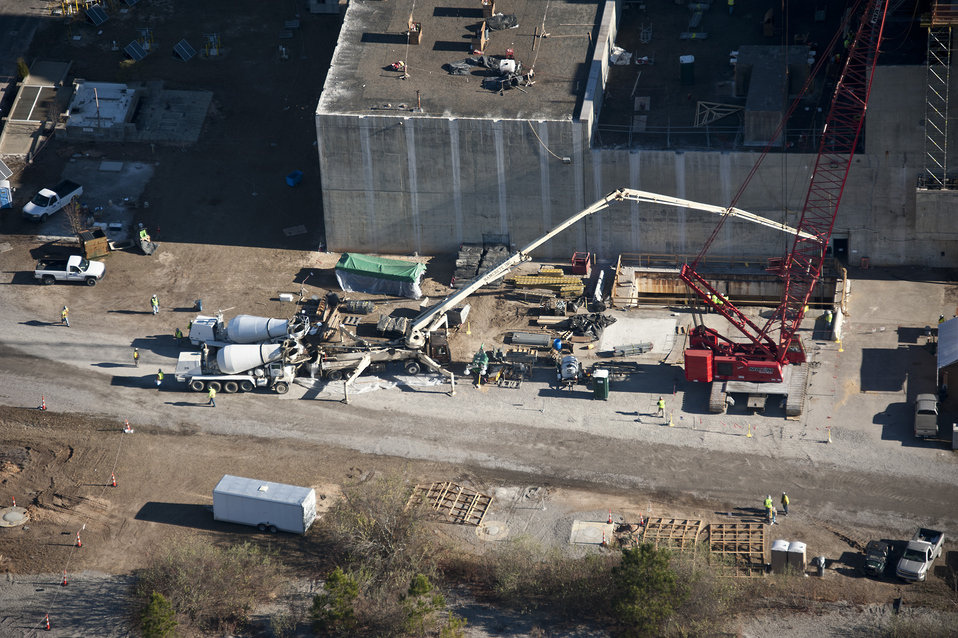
P Reactor Aerial